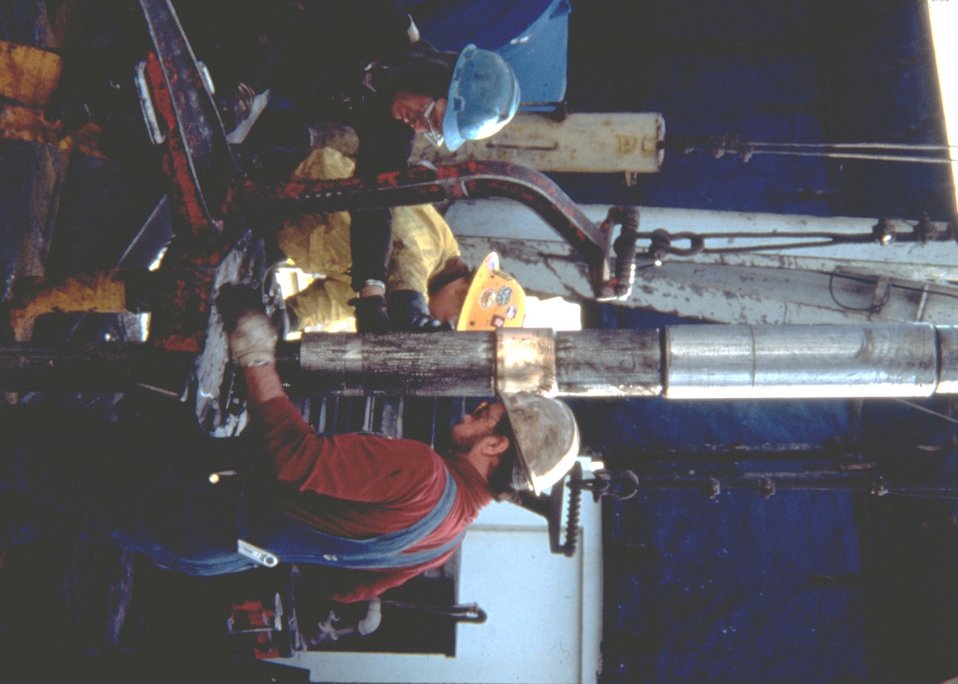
Drill site for coal bed methane.